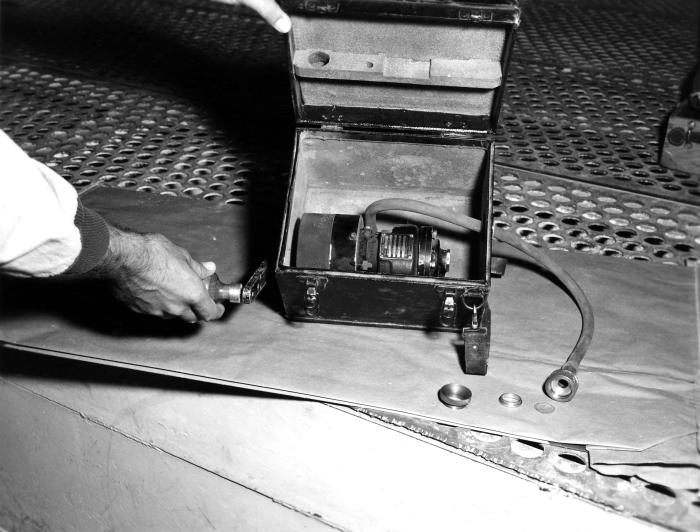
This 1958 historical photograph was provided by the Center for Disease Control's (CDC), National Institute for Occupational Safety and Health (NIOSH), and depicted a filter-paper air sampling apparatus. This device was used by an industrial hygienists during a Lompoc, California occupational health study, the results of which appeared in a U.S. Public Health Service Publication No. 601, in an article entitled,'Pneumoconiosis in Diatomite Mining and Processing', 1958.